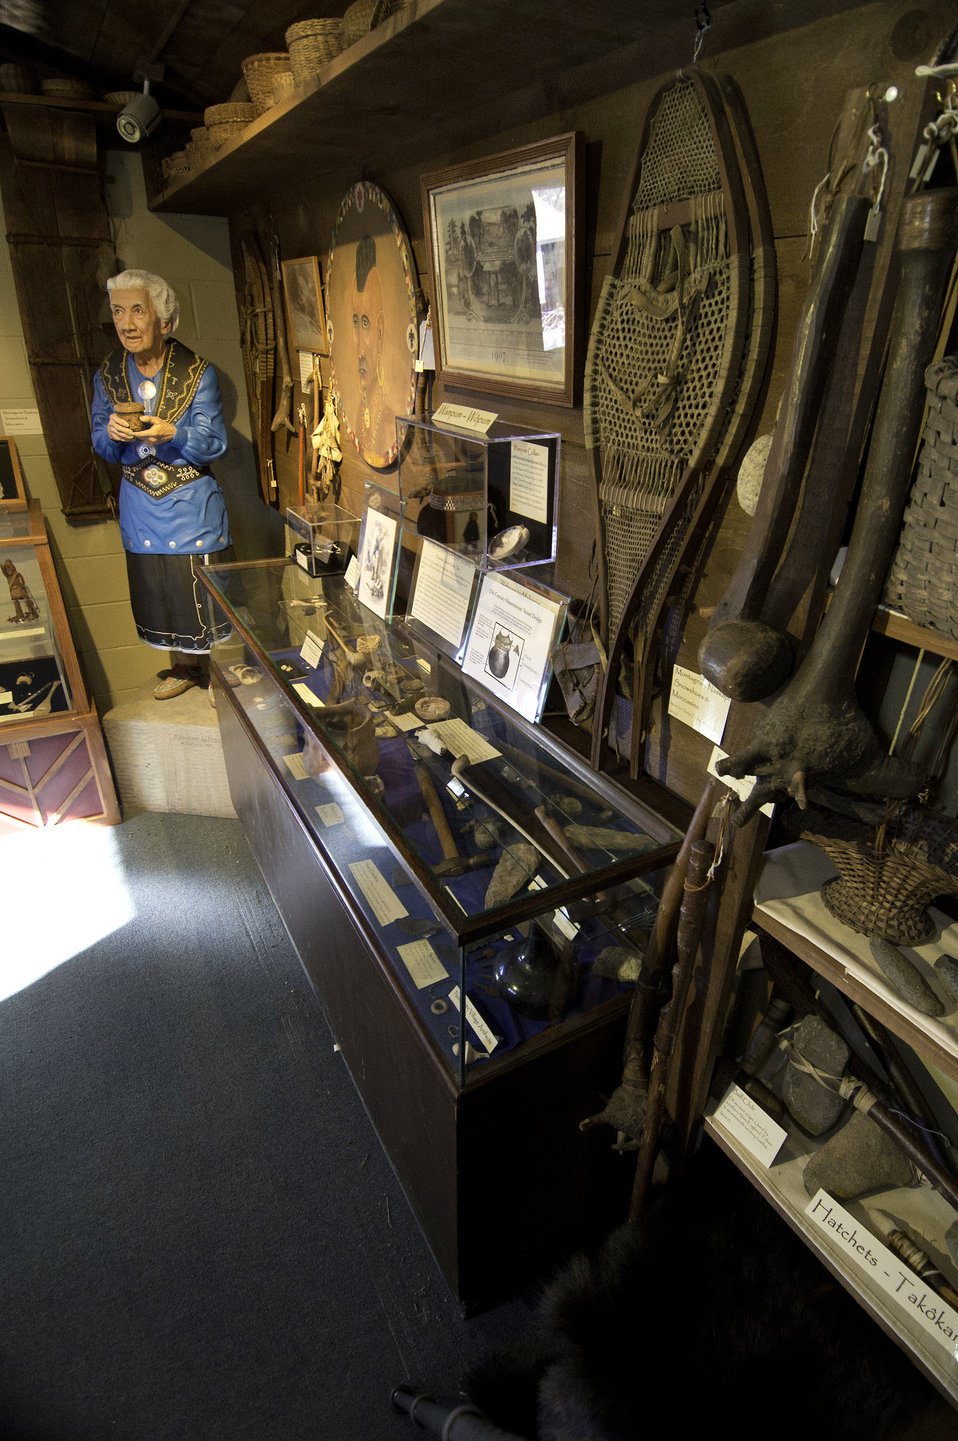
The Mohegan Tribe’s museum is the oldest Indian owned and operated museum in America. Gladys Tantaquidgeon along with her brother, Harold and father John, built the museum in 1931 in Uncasville, CT as a place to keep Mohegan treasures.